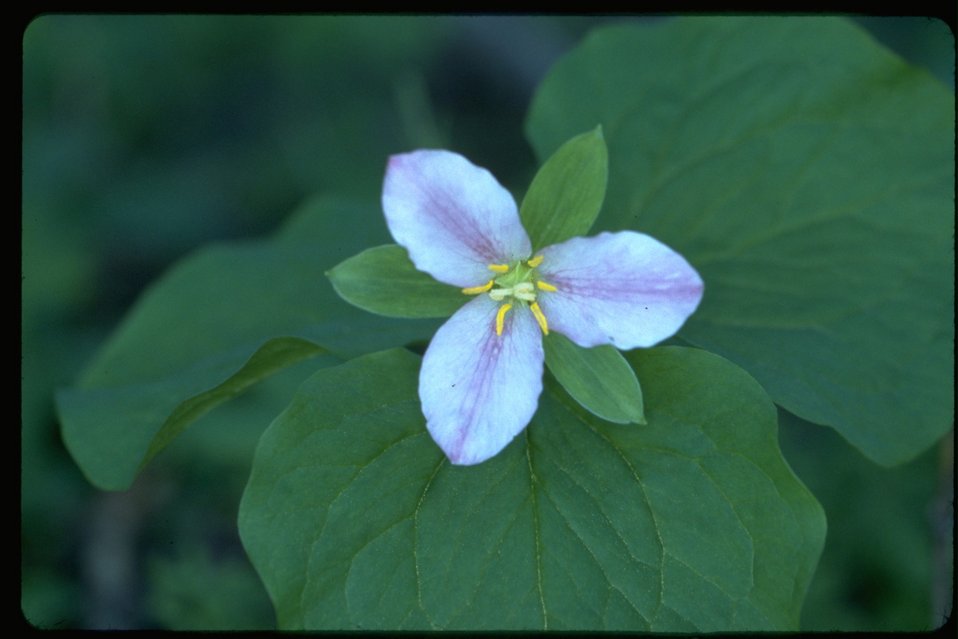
Medium shot of white Trillium with purple stripes.